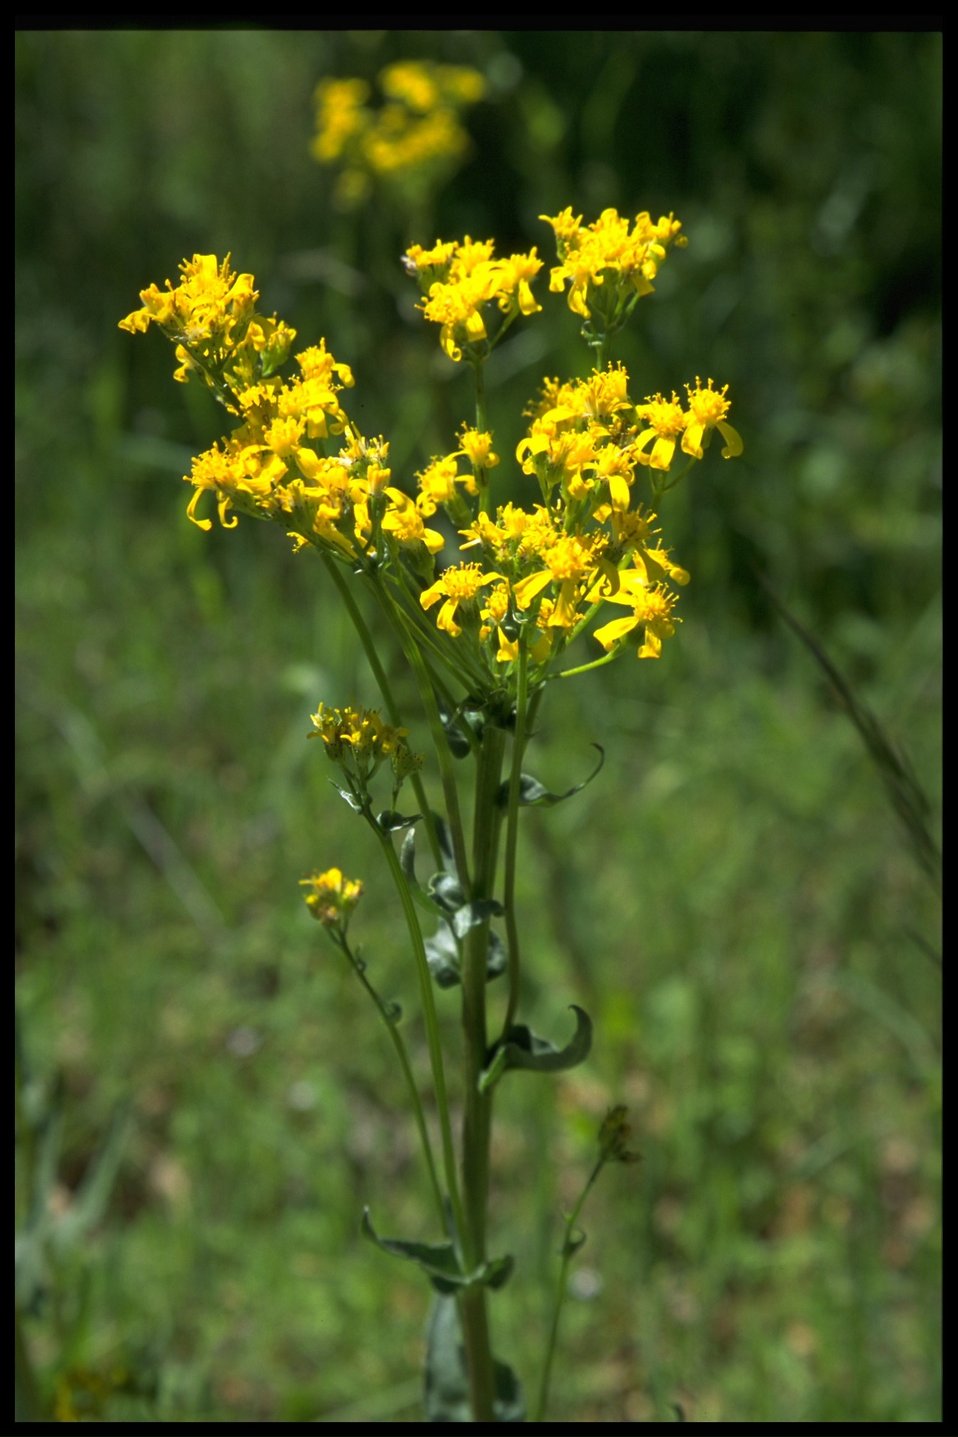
Medium shot of Senecio intefermis.